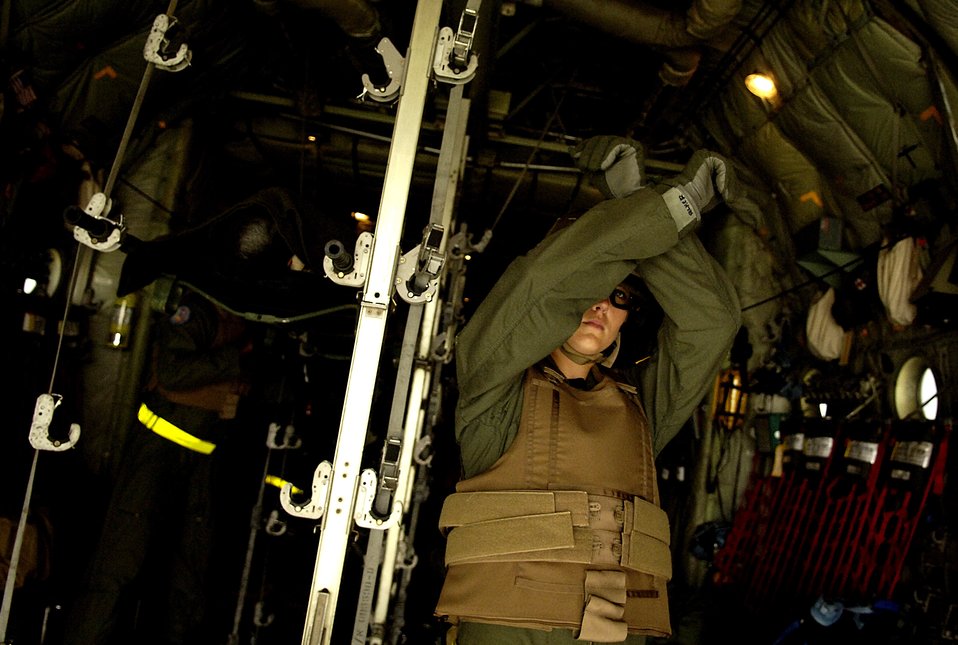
Aeromedical evacuation teams test life saving skills at Rodeo

Capt. Lisa Palmer directs her team as they load mock patients aboard a C-130 Hercules for the aeromedical evacuation competition July 23 during Air Mobility Command's Rodeo 2007 at McChord Air Force Base, Wash. Rodeo 2007 is a readiness competition of U.S. and international mobility air forces. Captain Palmer is the medical crew director and is assigned to the 375th Aeromedical Evacuation Squadron at Scott AFB, Ill.